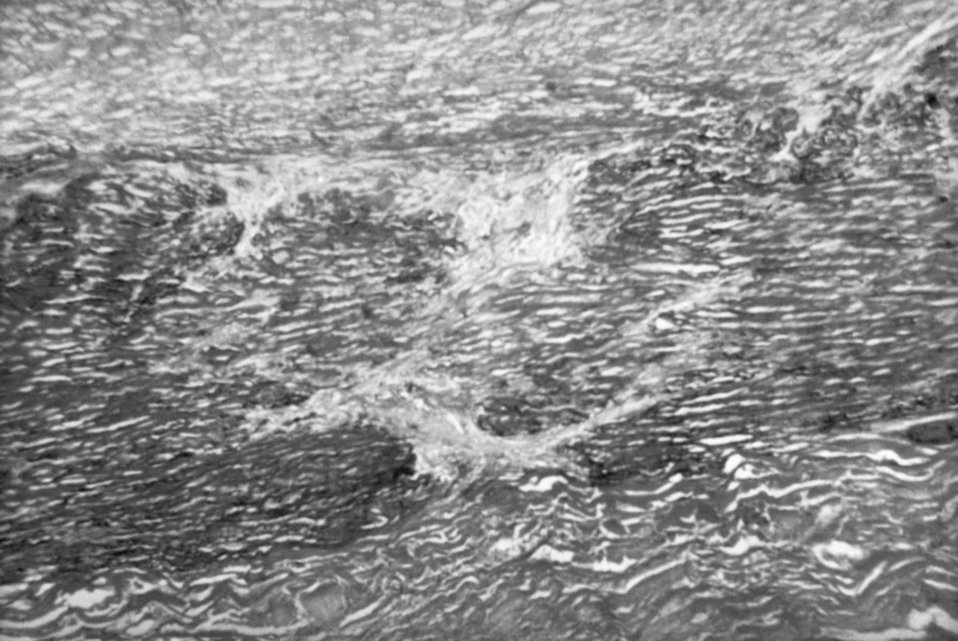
This photomicrographic section of the myocardium reveals a fibrous plaque as a result of syphilitic aortitis.